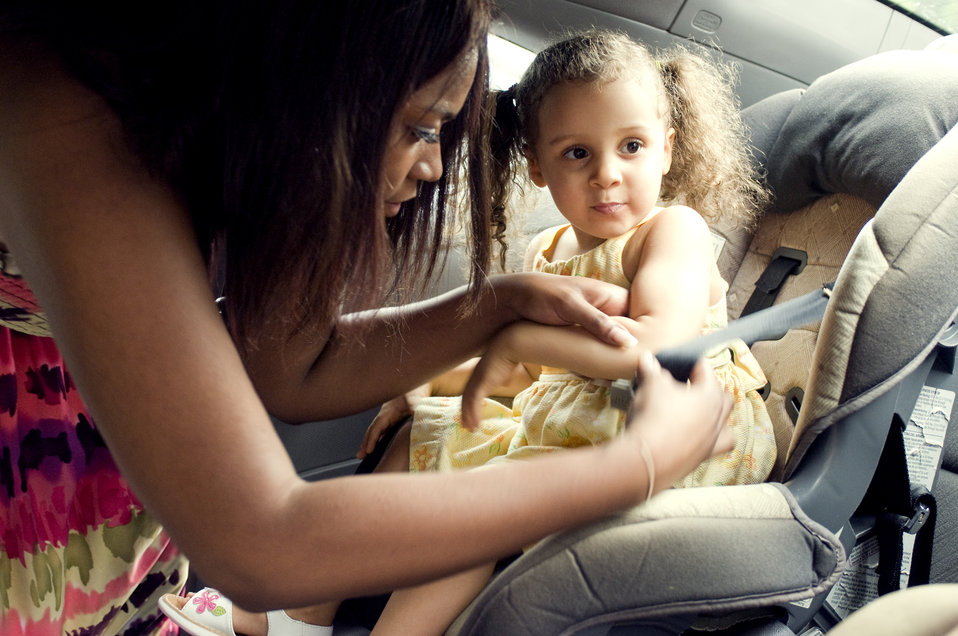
This image depicts a mother in the process of securing her young daughter into her back seat-located child safety seat. At this point of the process, she was adjusting her daughter's fit in the seat, ensuring both her safety and comfort.